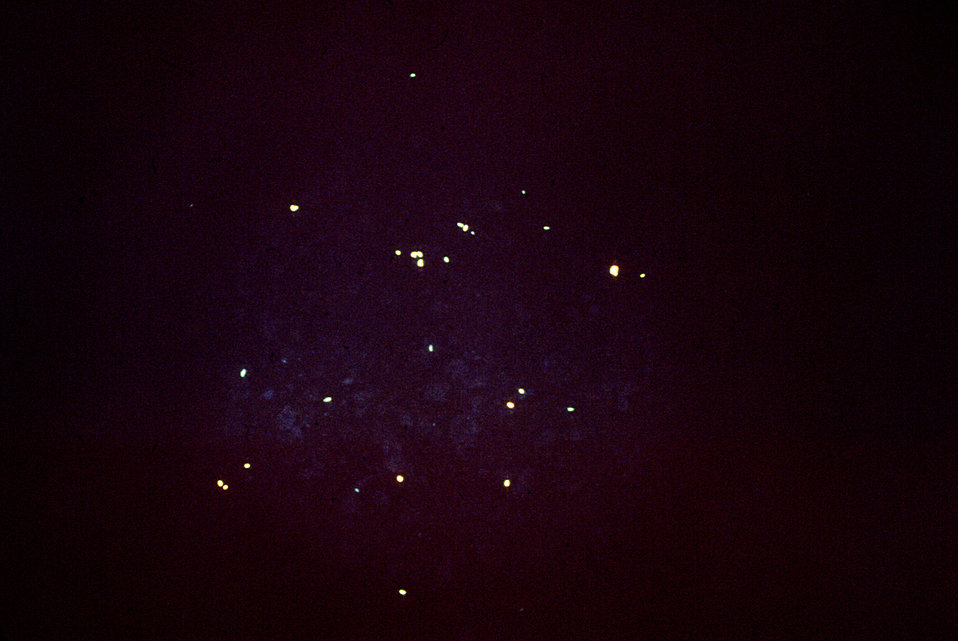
This micrograph reveals the presence of Mycobacterium tuberculosis stained with Truant's fluorochrome stain; Mag.-100x.